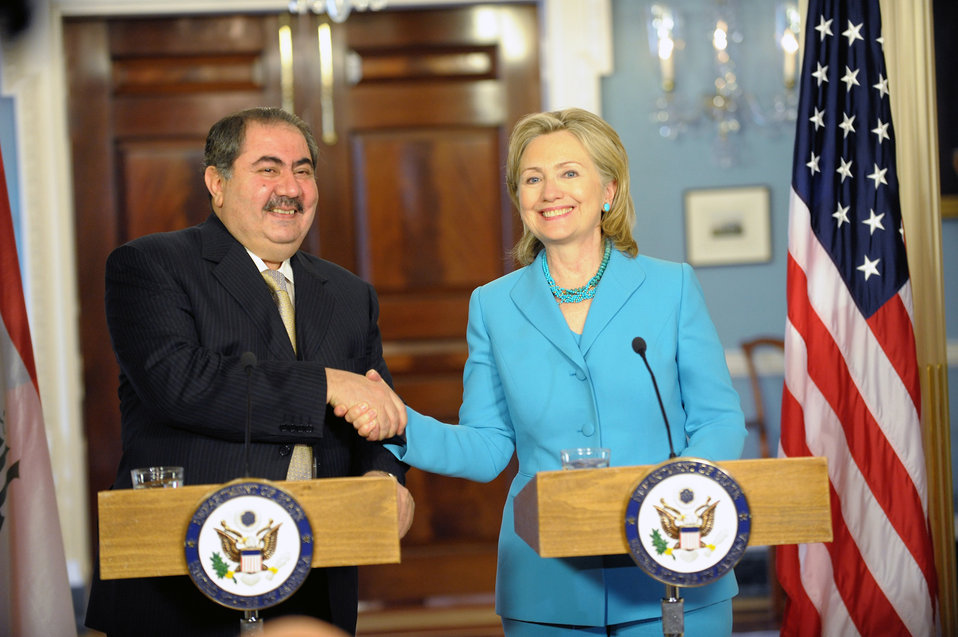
Secretary Clinton Shakes Hands With Iraqi Foreign Minister Hoshyar Zebari

U.S. Secretary of State Hillary Rodham Clinton shakes hands with Iraqi Foreign Minister Hoshyar Zebari after a bilateral meeting at the U.S. Department of State in Washington, D.C., on July 13, 2010.